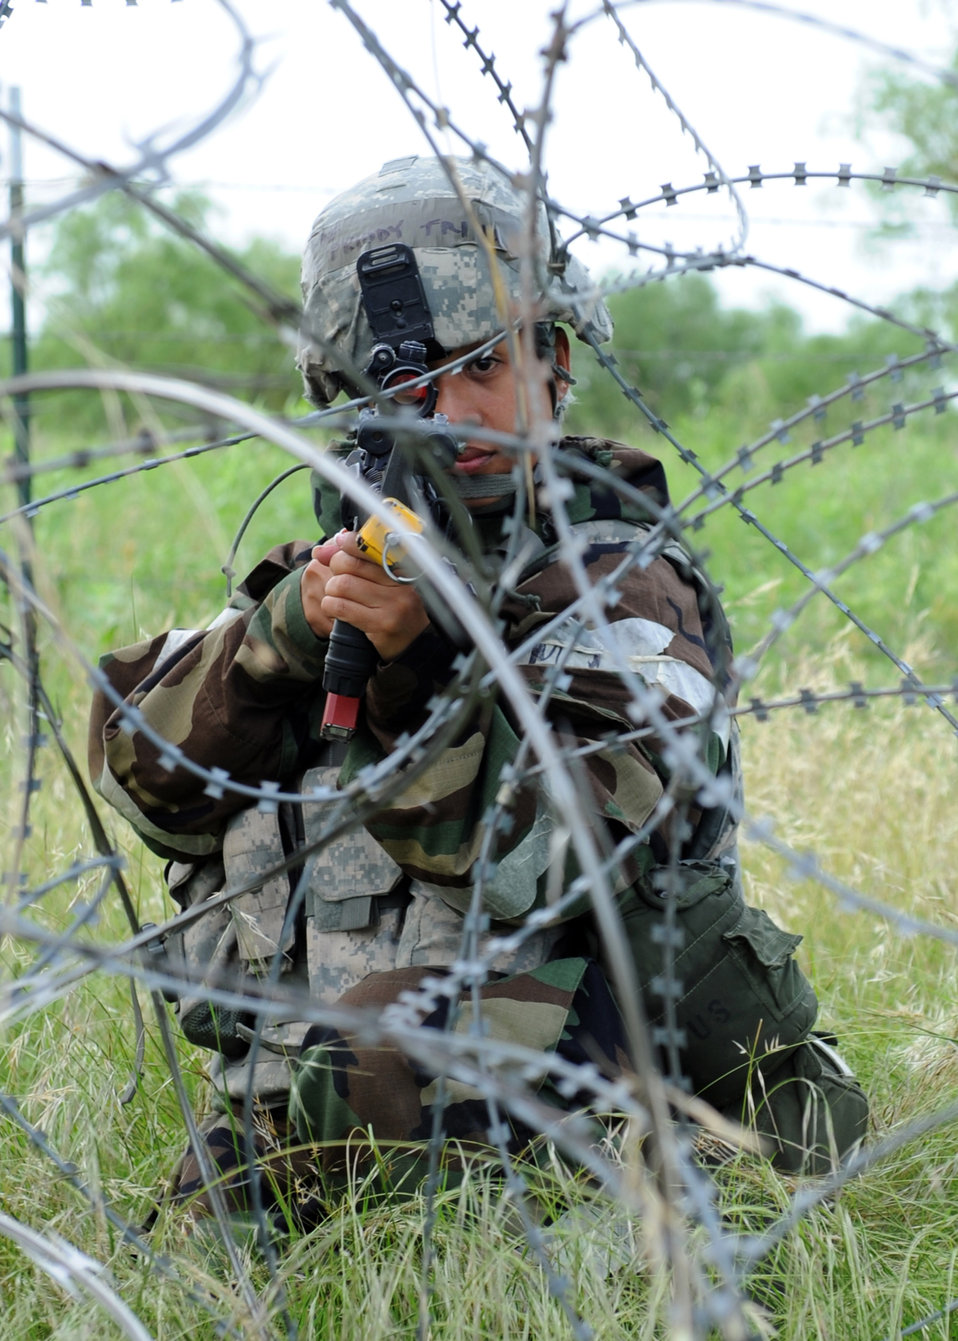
Step away from the wire

Staff Sgt. Trina Priddy defends her perimeter position May 25, 2010, during an operational readiness exercise at Dyess Air Force Base, Texas. Sergeant Priddy is assigned to the 7th Security Forces Squadron at Dyess AFB.